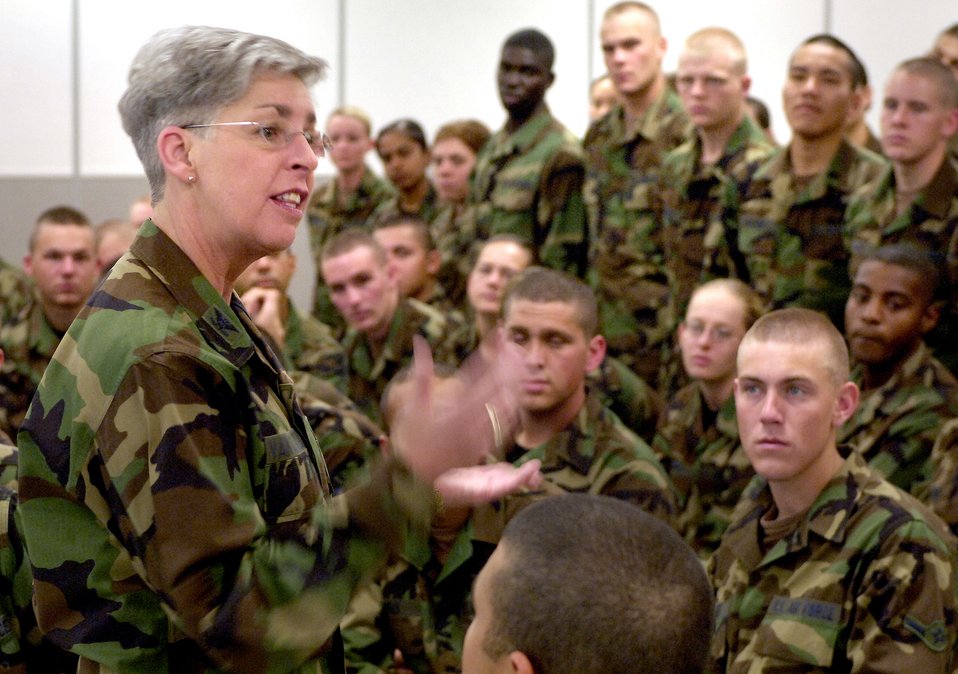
School's in session

KEESLER AIR FORCE BASE, Miss. (AFPN) -- Col. Deborah Van De Ven talks with Airmen entering training during the 81st Training Group newcomer's briefing Feb. 21. The 81st TRG technical resident courses include career fields such as personnel, information management, air traffic control, finance, manpower, communications-electronics maintenance, computer operation, maintenance and programming, weather, metrology, aircraft warning and control systems and radio operations. Colonel Van De Ven is commander of the 81st TRG.